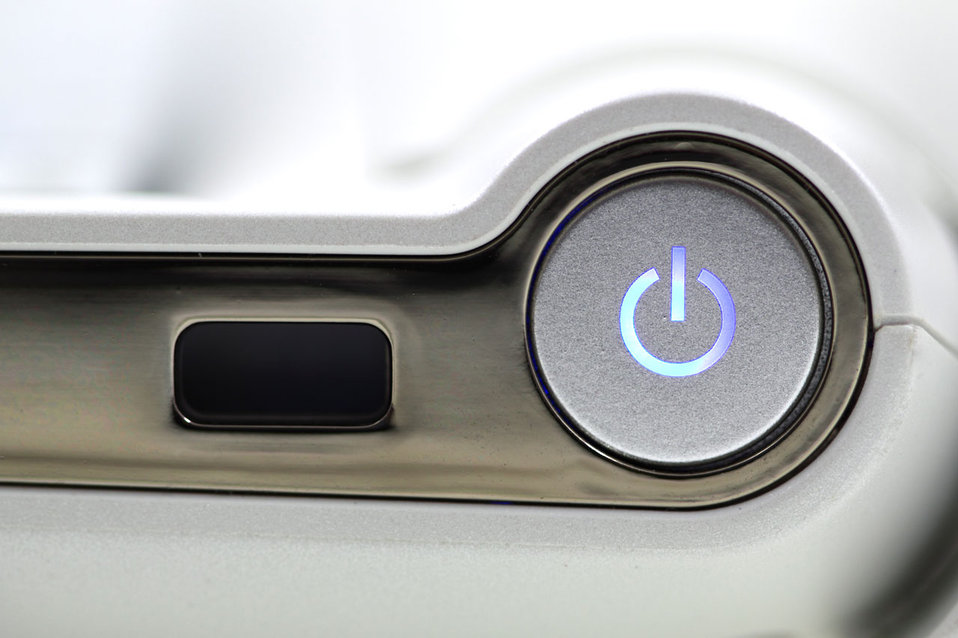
Power button on side of computer.